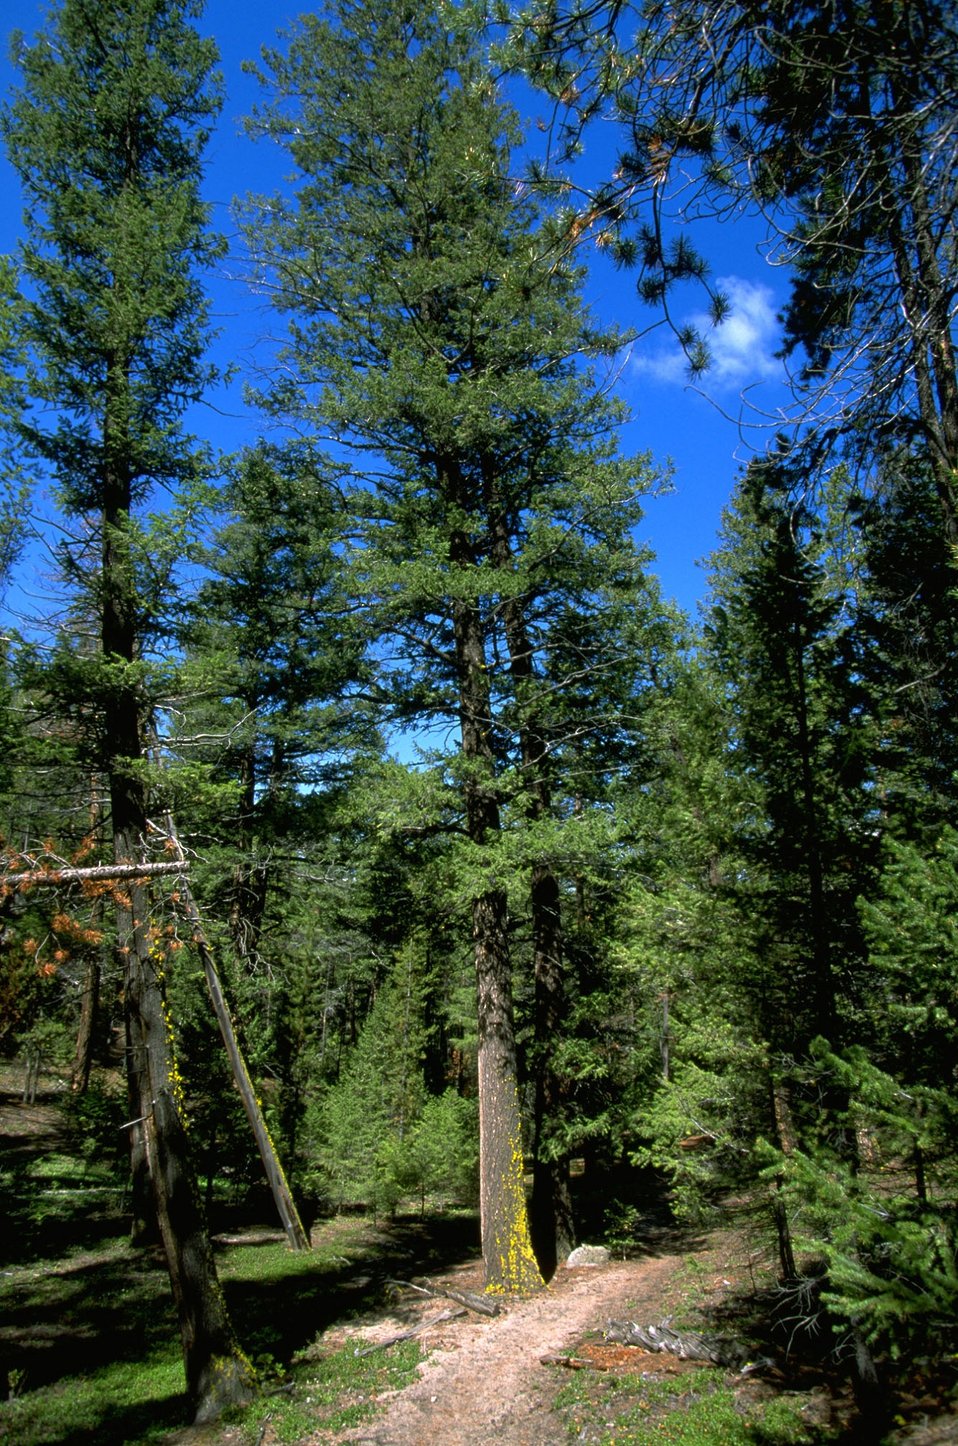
Tall tree with moss on the trunk beside mountain trail